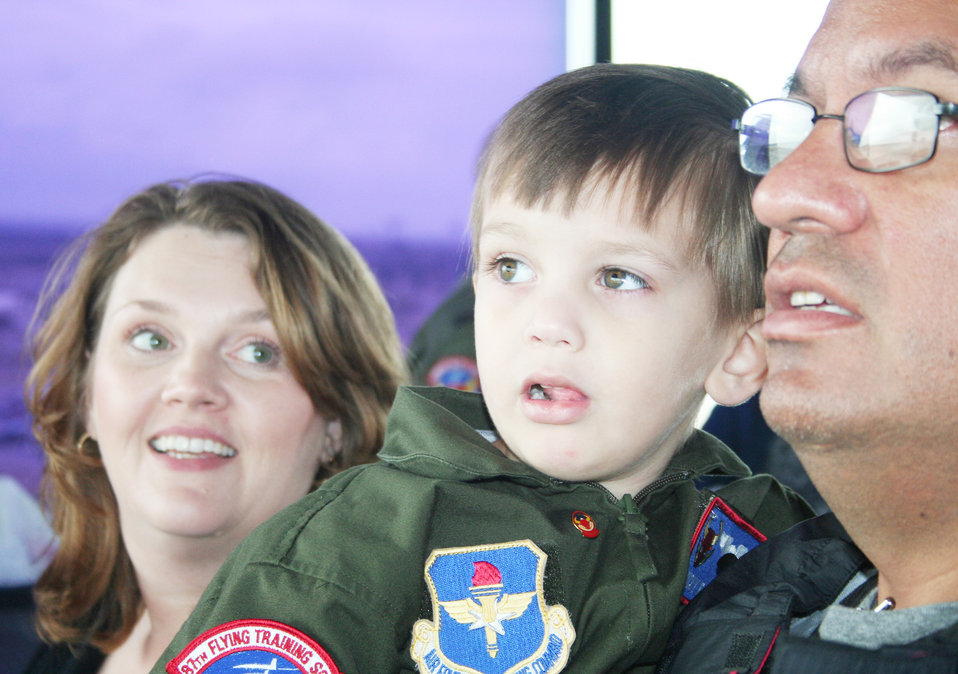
Laughlin Airmen give special opportunity to one of their own

Nicky Pena and his family observe how a major airfield works from the air traffic control tower during his pilot for a day activities Nov. 20, 2009 at Laughlin Air Force Base, Texas. Nicky was able to participate in numerous activities including tours of the 87th Flying Training Squadron and the Laughlin AFB fire station.